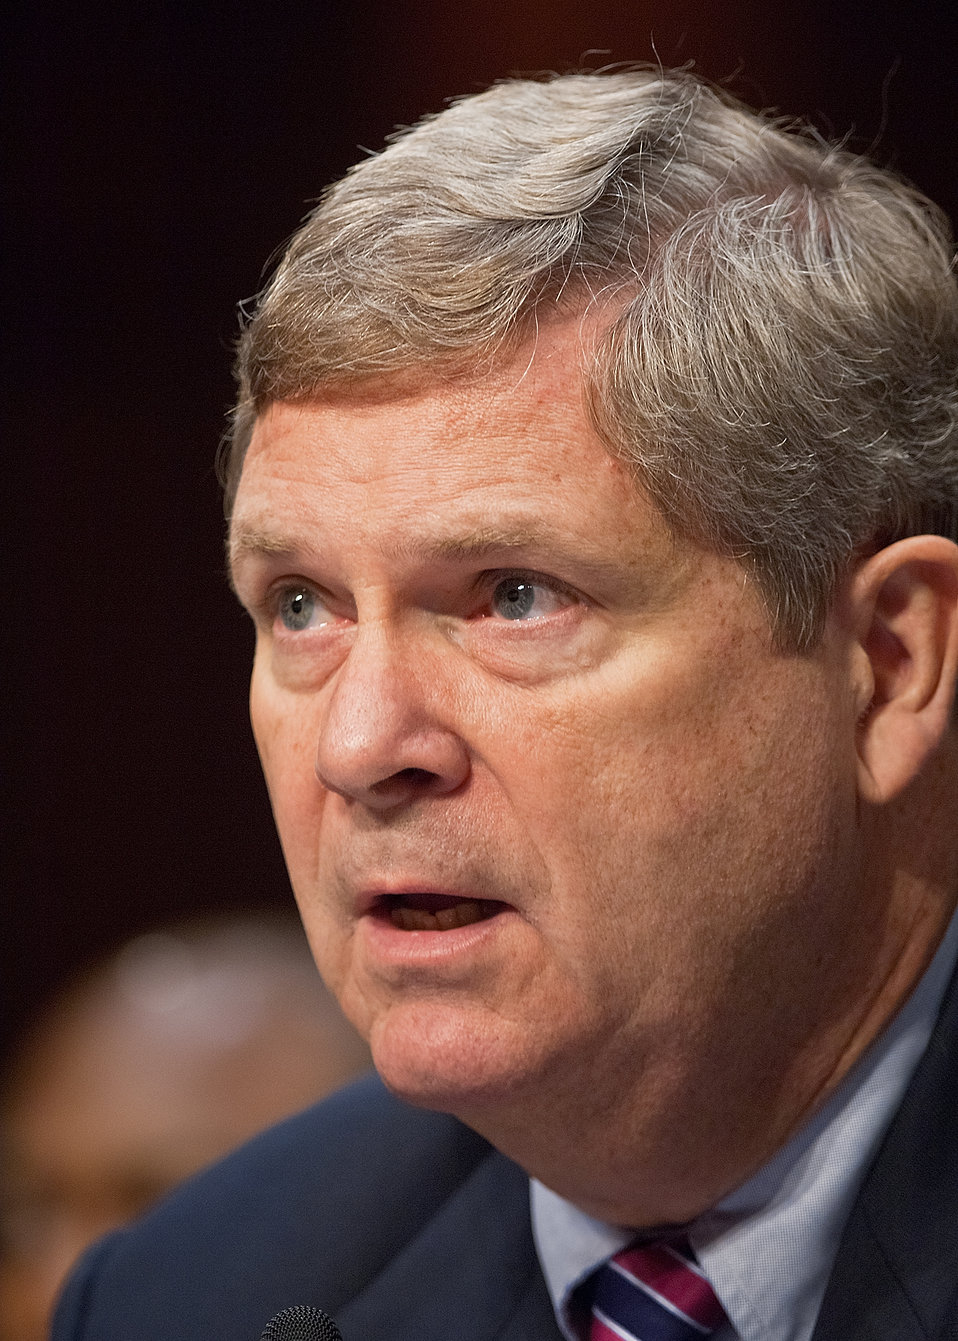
Agriculture Secretary Tom Vilsack spoke before the Senate Committee on Agriculture, Nutrition and Forestry, in Washington, DC, Thursday, May 26, 2011. Secretary Vilsack stated that, “Many folks don’t recognize it, but America’s farmers and our agriculture industry are responsible in no small way for the health and strength of this nation. Not only do we rely on American agriculture for our food, feed, fiber and fuel, our agricultural producers preserve our environment, and help drive our national Economy.”